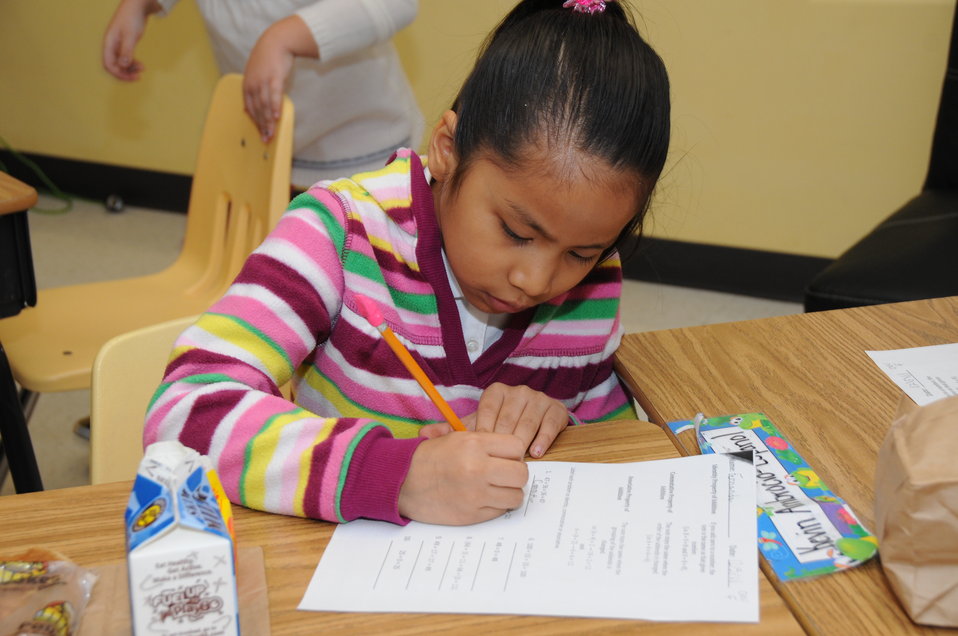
Thornton - Lake Forest Elementary School - Dec 5, 2011 079

A student works hard on her assignment while eating a grab ‘n’ go breakfast in Mikelle Caine’s second grade advance class at Lake Forest Elementary School, Sandy Springs, Ga.